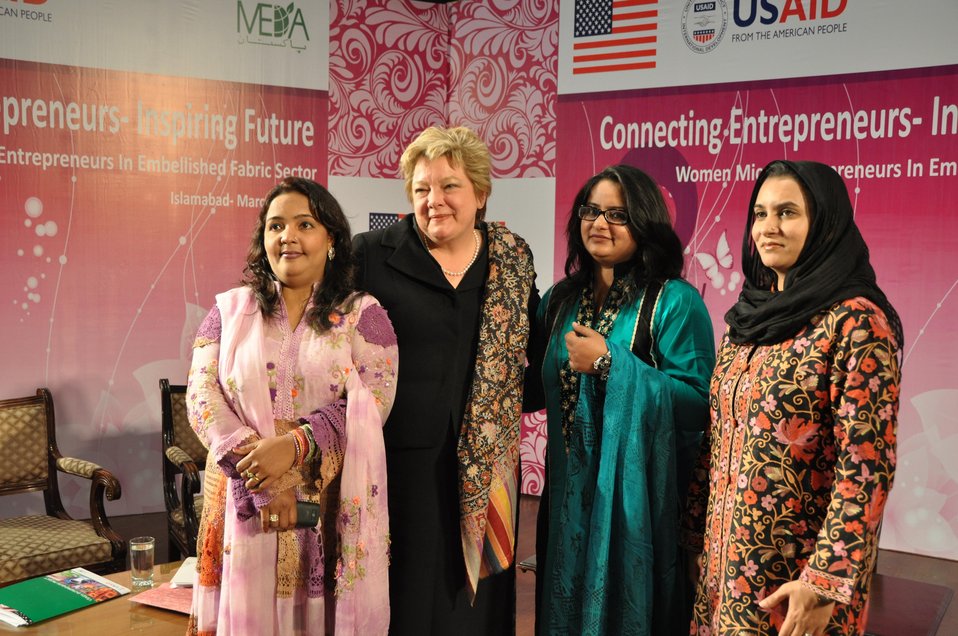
International Women’s Day

Islamabad, March 08, 2012 - The United States Agency for International Development (USAID) celebrated International Women’s Day, hosting a panel discussion with women entrepreneurs.
Panel members in addition to USAID’s
- Karen Freeman
- Wajeeha Nasreen, Sr. Product Development Manager, Gul Ahmed (famous Pakistani fabric brand)
- Dr. Nosheen, CEO, Generations (famous clothing brand)
- Razia Zubairi, Director General, Technical Education and Vocational Training Authority, Punjab
- Shaheen Khan, Sales Agent, ECDI, USAID sub-grantee